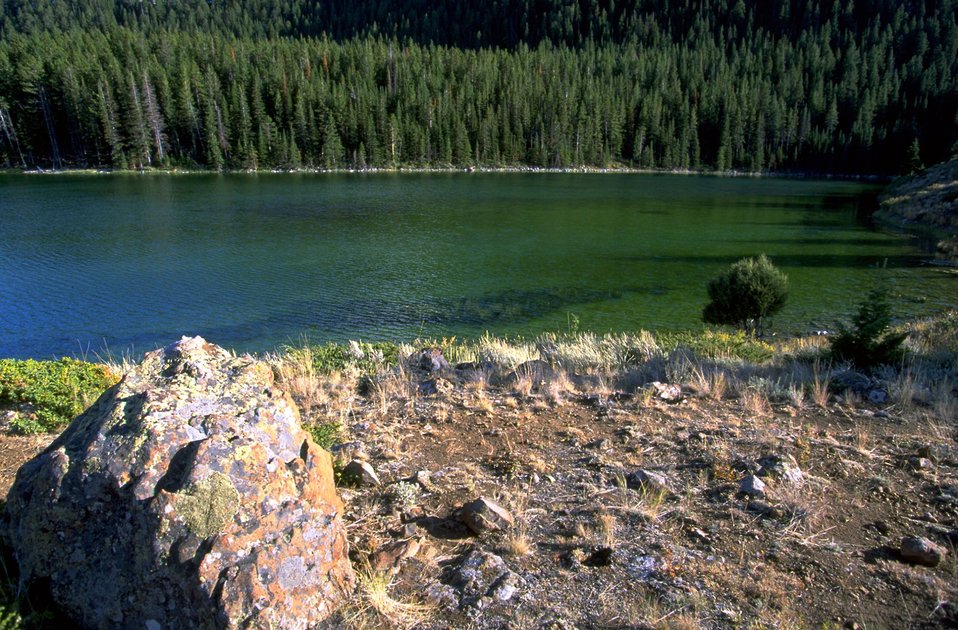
Axolotl Lake, upper end